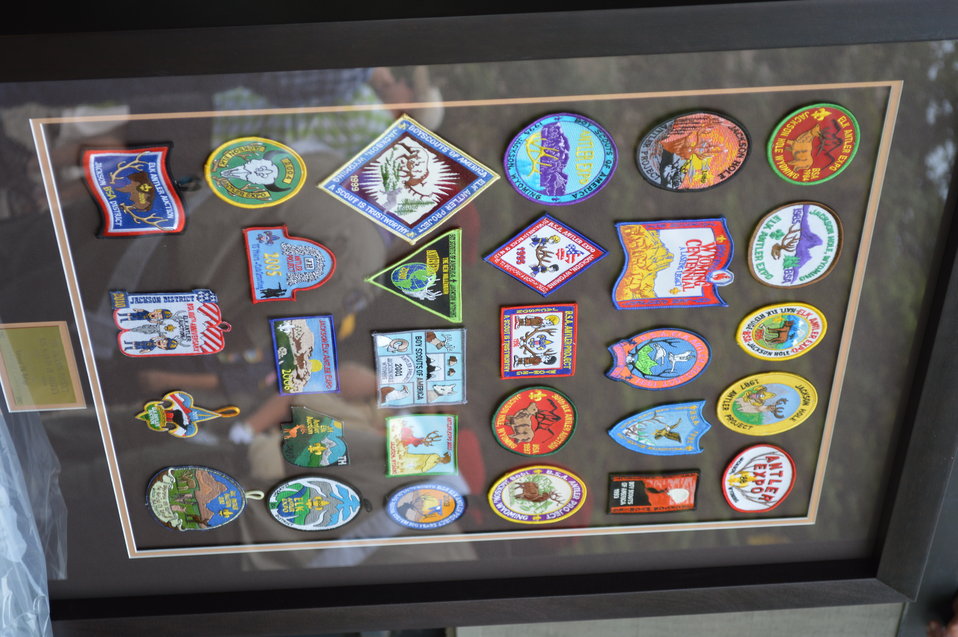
A Birthday Gift for the Refuge

The Jackson District Boy Scouts, who have a long-standing relationship with the National Elk Refuge, presented the refuge with a framed collection of patches at the National Elk Refuge's centennial ceremony on August 10.